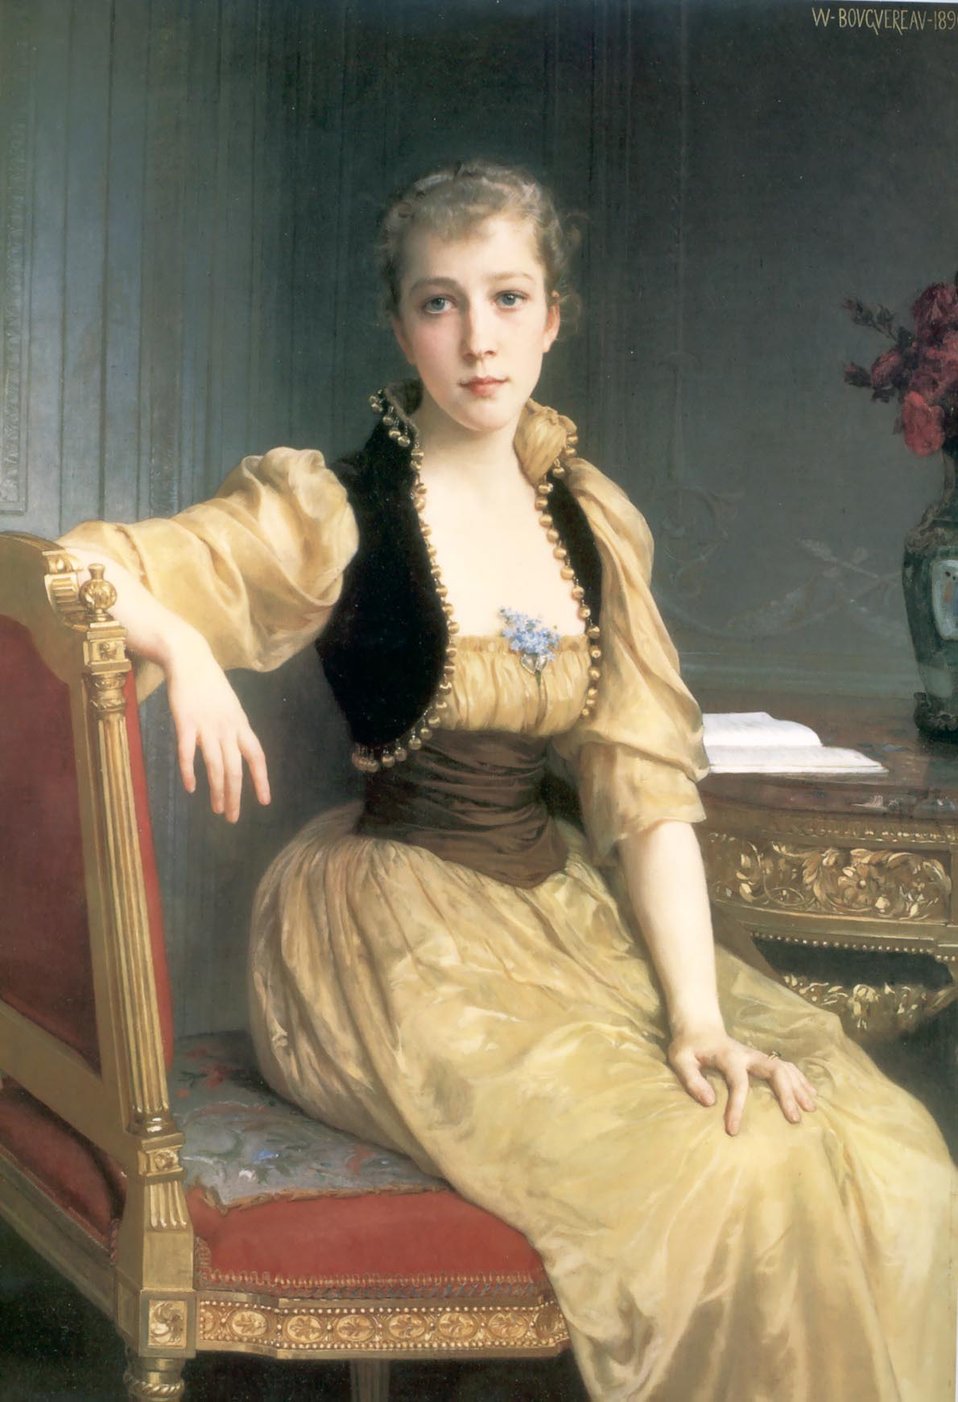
Bouguereau - Lady Maxwell - 1890